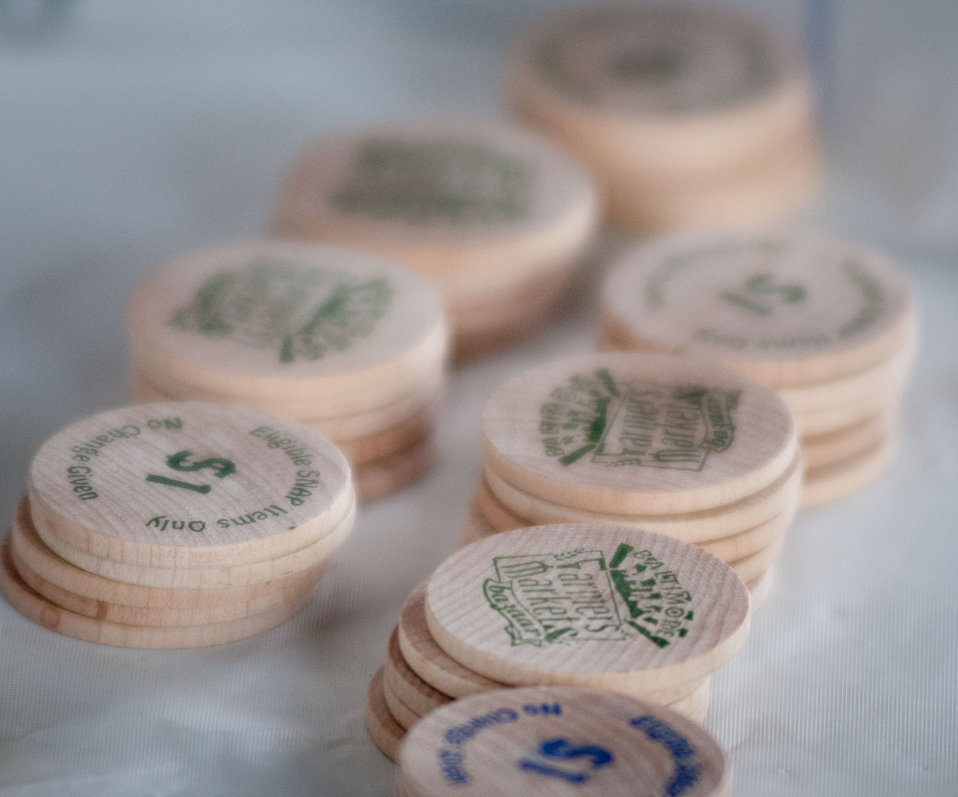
Using a new wireless connected electronic card reader consumers can now use the U.S. Department of Agriculture’s (USDA) Food Nutrition Service’s (FNS) Supplemental Nutrition Assistance Program (SNAP) Electronic Benefits Transfer (EBT) cards, Baltimore Bucks, and debit cards to get wooden tokens for use at the Baltimore’s Farmers Market and Bazaar in Baltimore, MD on Sunday, July 8, 2012. Today marked the new wireless capability that supports portable terminal use to accept “SNAP participation at farmers' markets helps provide fresh fruit and vegetables to families and expands the customer base for local farmers in the Delmarva area, a win-win for agriculture and local communities,” said Agriculture Deputy Secretary Kathleen Merrigan. “And when we couple SNAP access at farmers' markets with strategies like education, cooking demonstrations, and community support in the Baltimore area, consumption of healthy foods has potential to grow even more.”